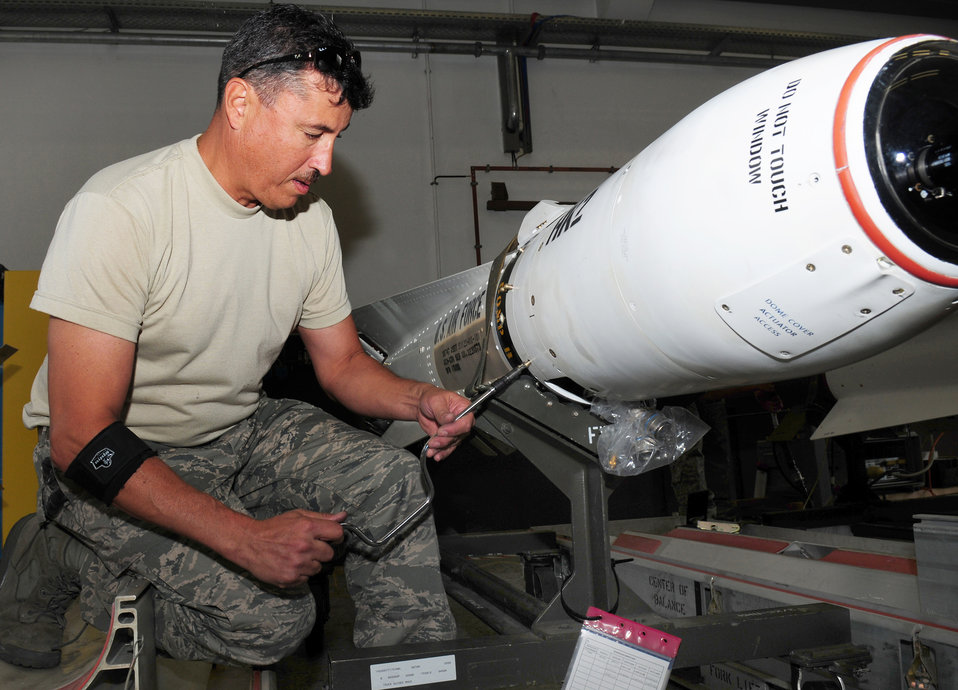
Missile retrofit provides better accuracy, saves Air Force money

Master Sgt. Eugene Rinaldi removes the guidance control section of an AGM-65 Maverick missile system for upgrades Aug. 11, 2009 at Ramstein Air Base, Germany. Each missile weighs either 466 or 654 pounds, depending on the model. Sergeant Rinaldi is an Air Force Reserve ammunition team member.